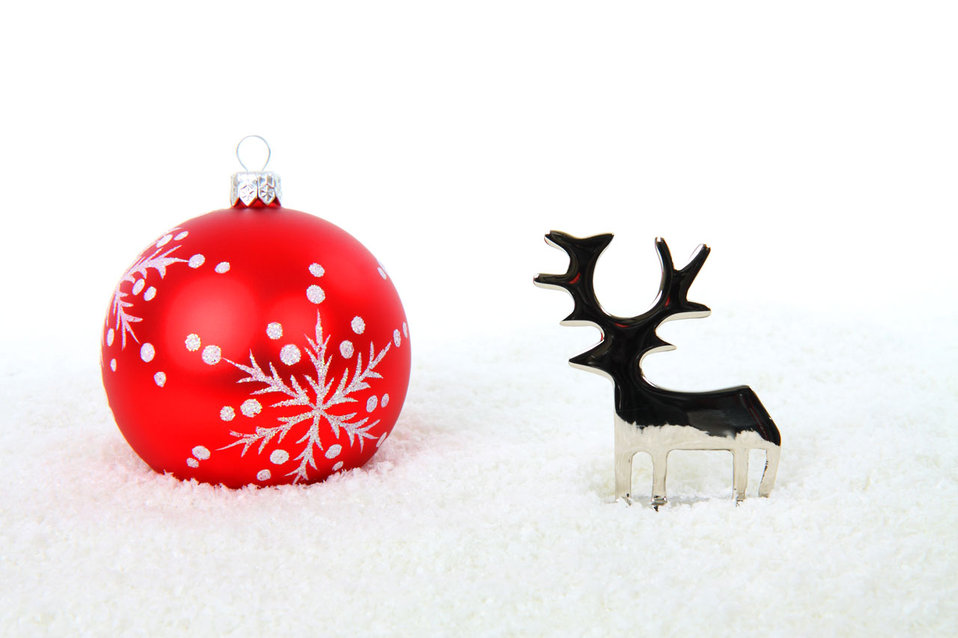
Reindeer and christmas ball

Reindeer and christmas bauble in snow.